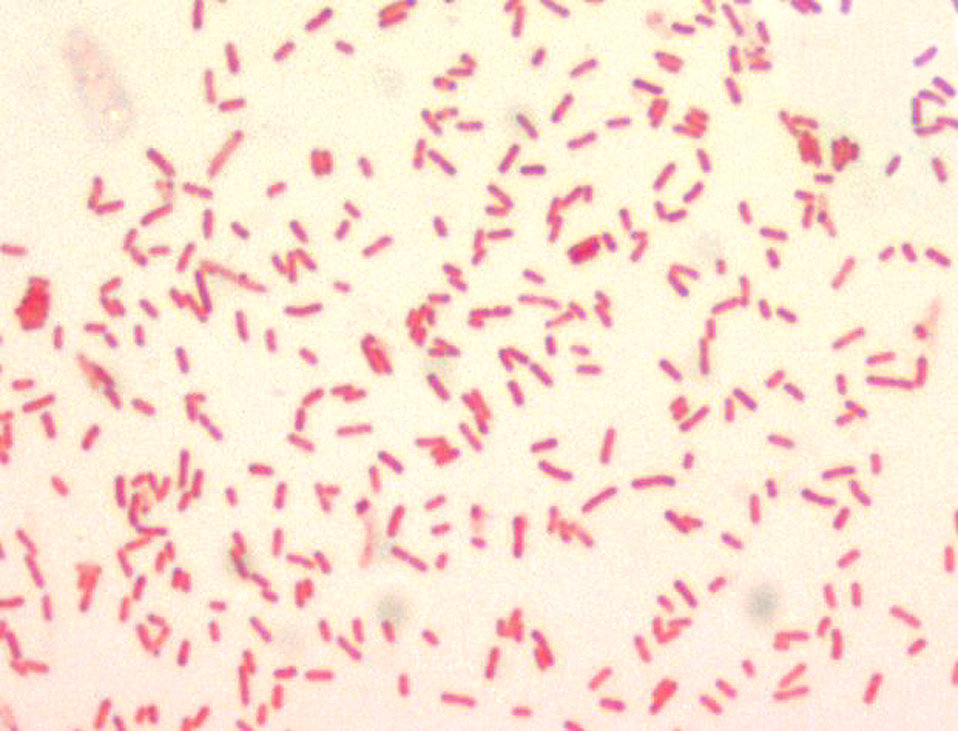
Yersinia pestis, Gram-negative bacillus, 1000x Magnification.